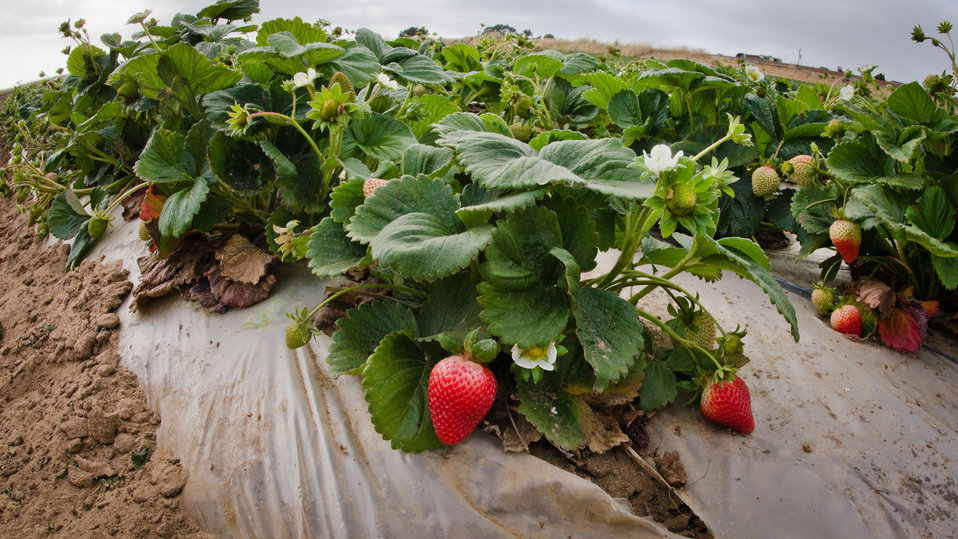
A strawberry farm near Castroville, CA, on Thursday, June 16, 2011.